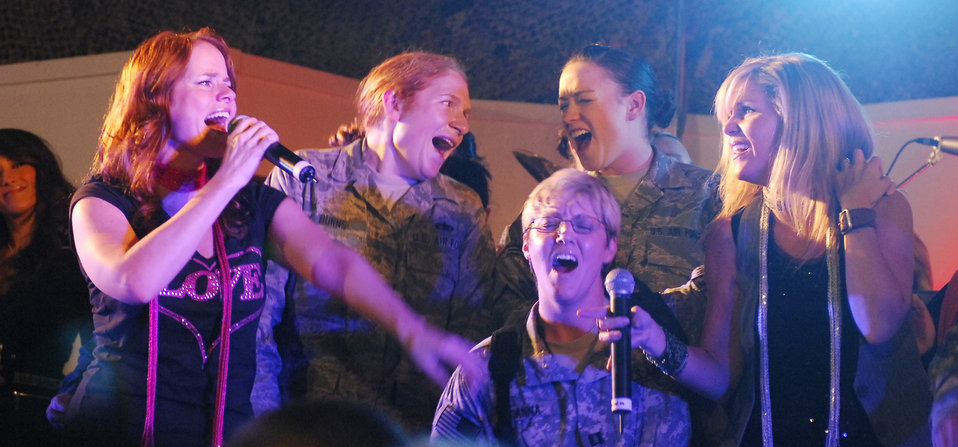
Celebrities thank troops at Thanksgiving concert

Tech. Sgt. Amanda Burns (left) and Senior Airman Kayla Bilger (right) sing onstage with members of the Lieutenant Dan Band Nov. 23, 2009, at Bagram Airfield, Afghanistan. Sergeant Burns, a Falmouth, Ken., native deployed from the U.S. Air Force Academy, won a pair of round trip tickets to anywhere in the states. Airman Bilger is from Hartland, Mich., and is deployed from Geilenkirchen Air Base Squadron, Germany.